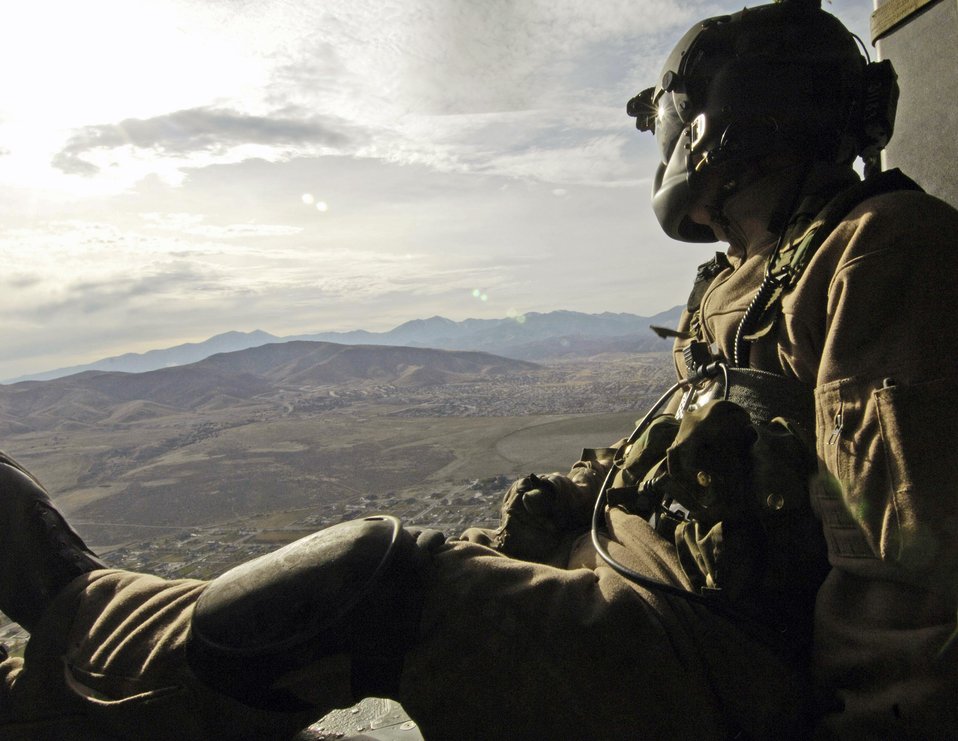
Combat search and rescue training in Utah

Staff Sgt. Alan Rydman scans the terrain for a safe landing zone during a combat search and rescue integration exercise Nov. 8 at Camp Williams, Utah. . Sergeant Rydman is a 34th Weapons Squadron flight engineer from Nellis Air Force Base, Nev. The exercise expanded the integration with Utah's 211th Aviation Group AH-64 Apache Joint Rotary Wing, 4th Fighter Squadron F-16 Fighting Falcon assets from Hill AFB, Utah, and special operations forces. Exercise participants also conducted extensive joint combat search and rescue operations against surface-to-air threats. The exercise is being run held Nov. 6 through 15.